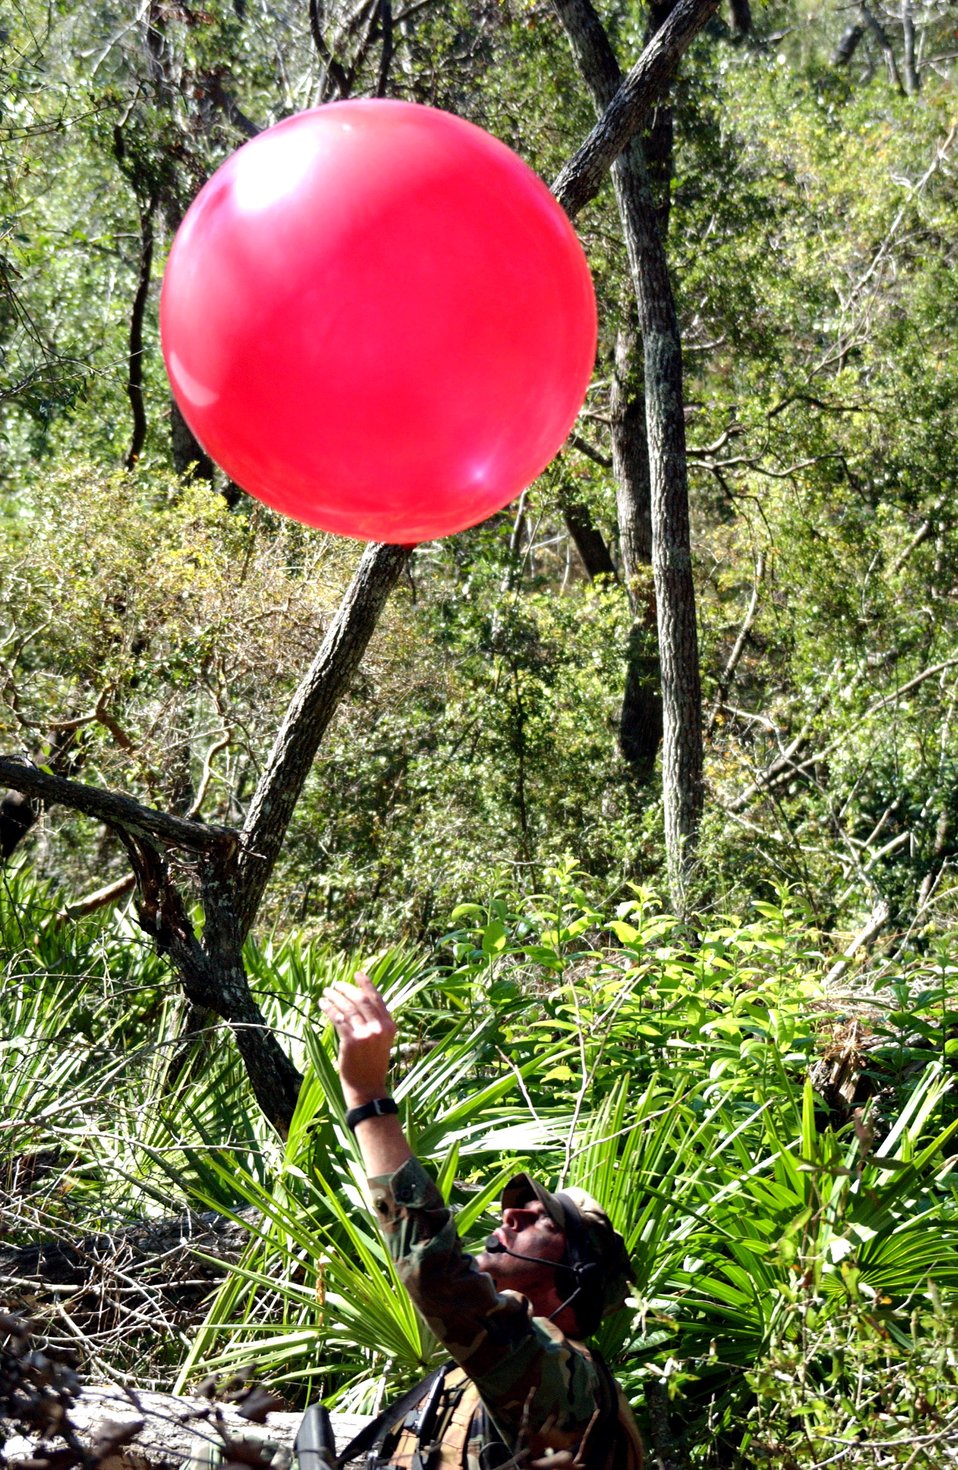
Weather balloon

Staff Sgt. Jody Ball releases a weather balloon during a special operations' weather team exercise near Hurlburt Field, Fla. Battlefield weathermen from the 3rd and 18th Air Support Operations groups will be realigned under the new 93rd Air Ground Operations Wing, when that unit activates in January at Moody Air Force Base, Ga. Sergeant Ball is a weatherman with the 10th Combat Weather Squadron.